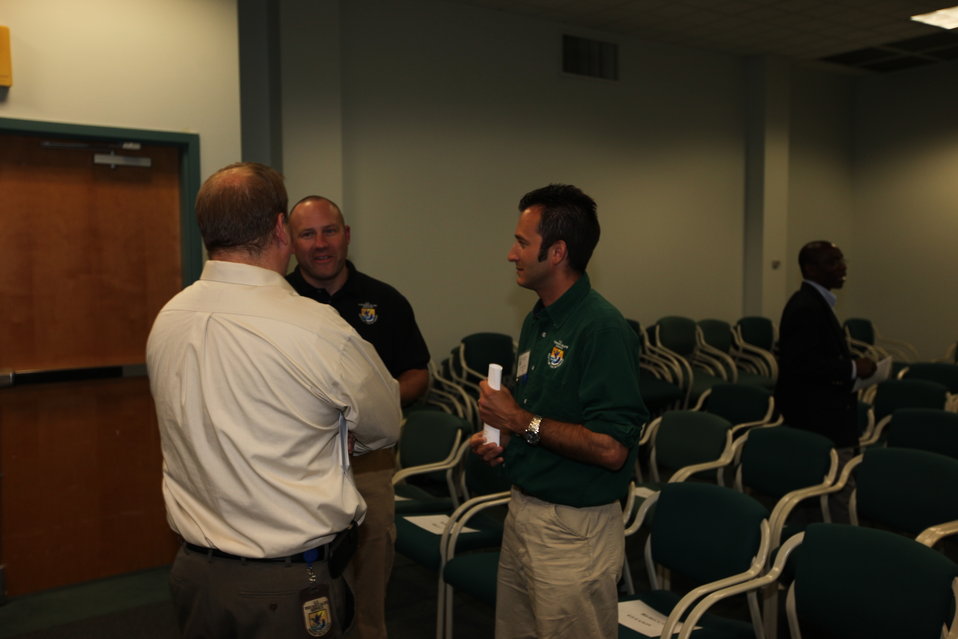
Northeast Region Employee Appreciation Awards